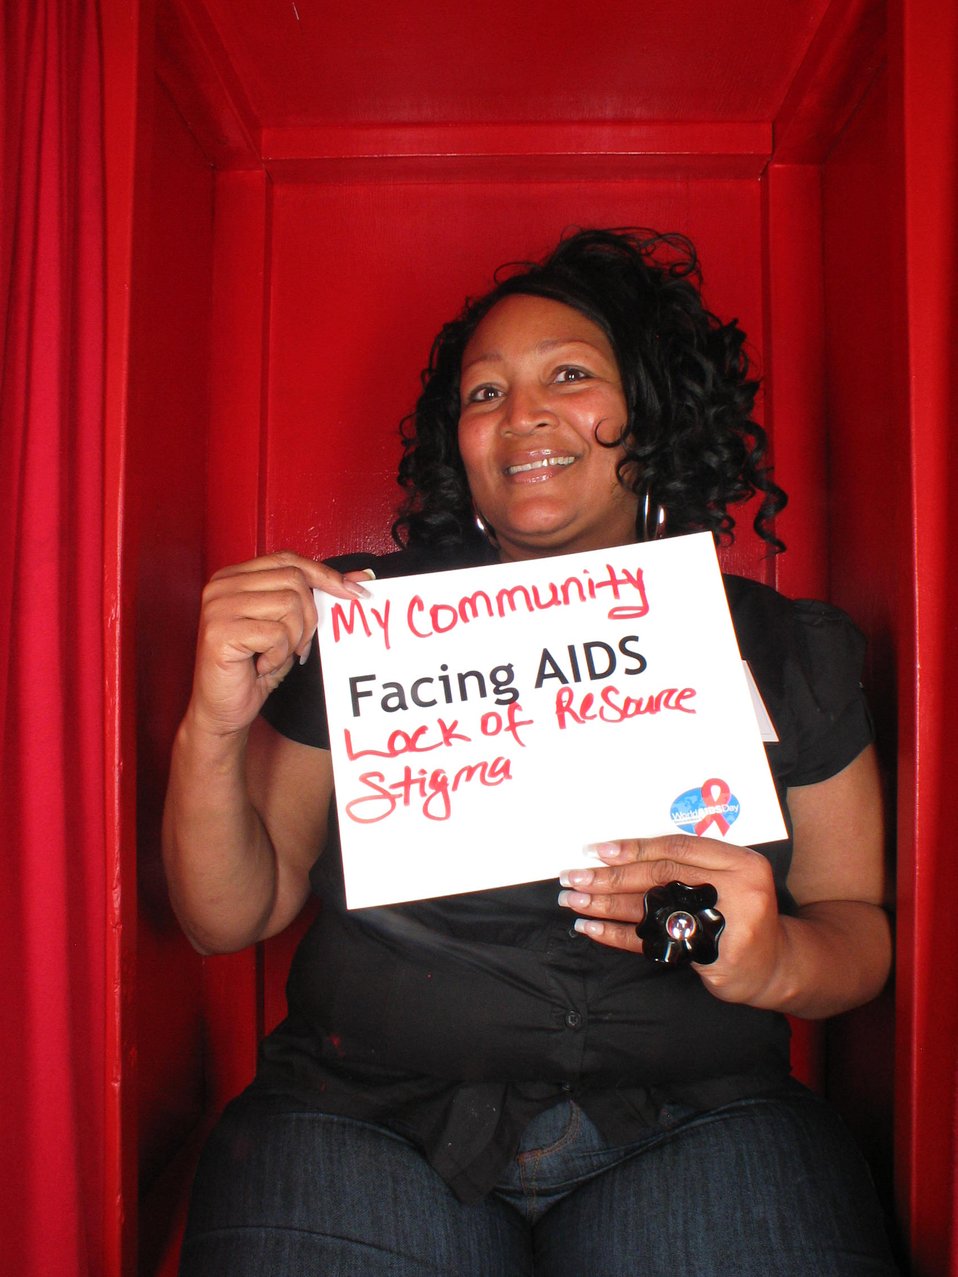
My community is Facing AIDS lack of resources and stigma.